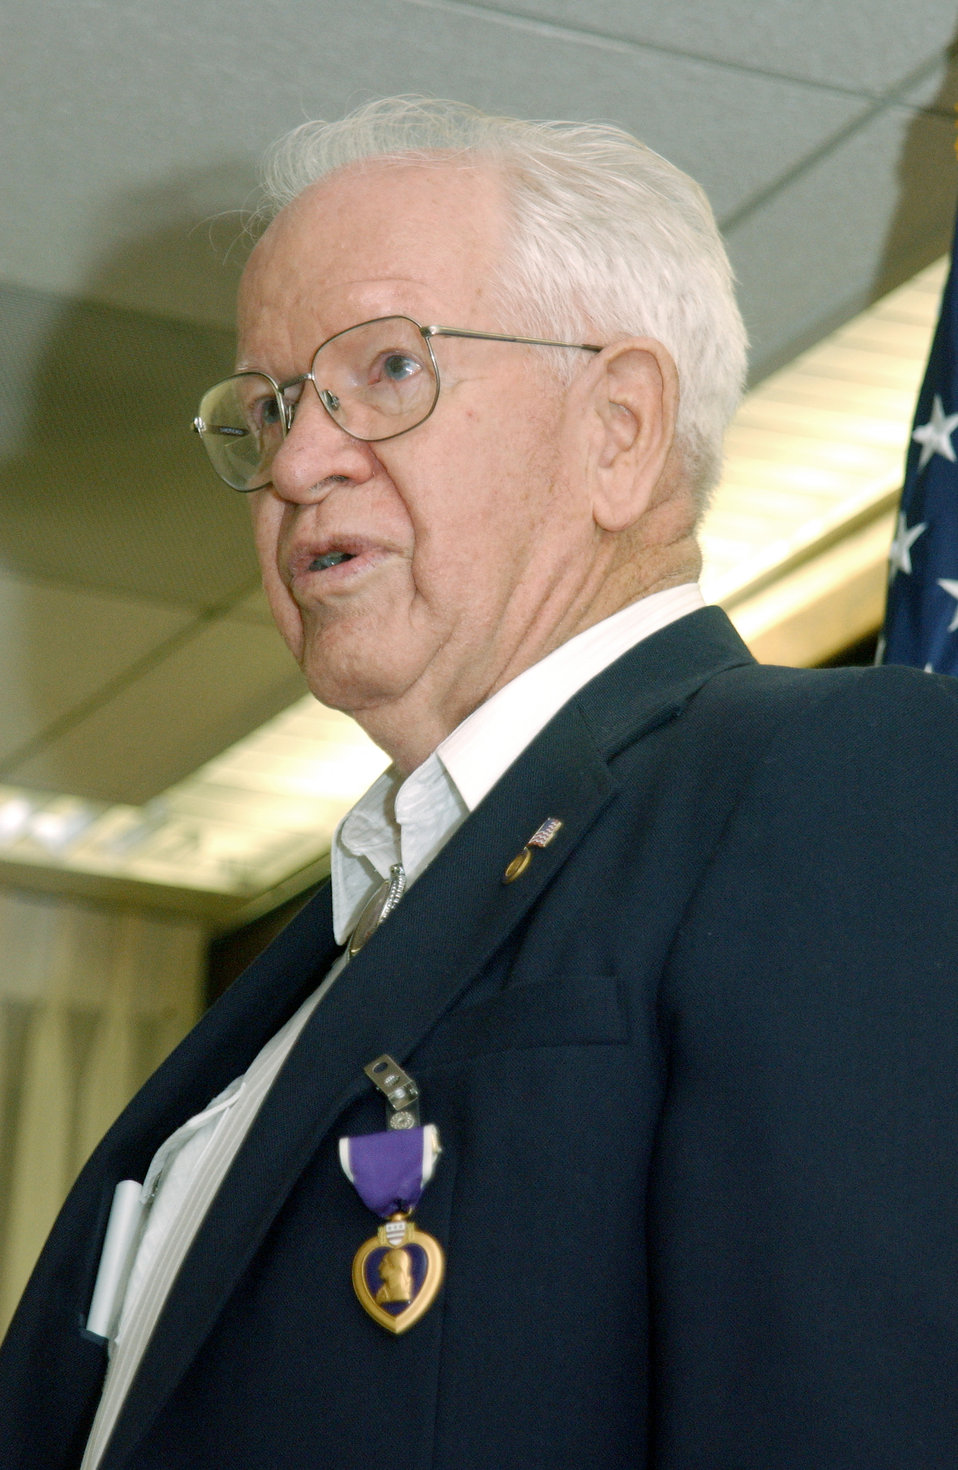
Purple Heart presentation

VANDENBERG AIR FORCE BASE, Calif. -- Retired Lt. Col. Wayne Ehlers wears the Purple Heart that was presented to him July 26 for being wounded in combat nearly 60 years ago while flying over his target in Germany during World War II.